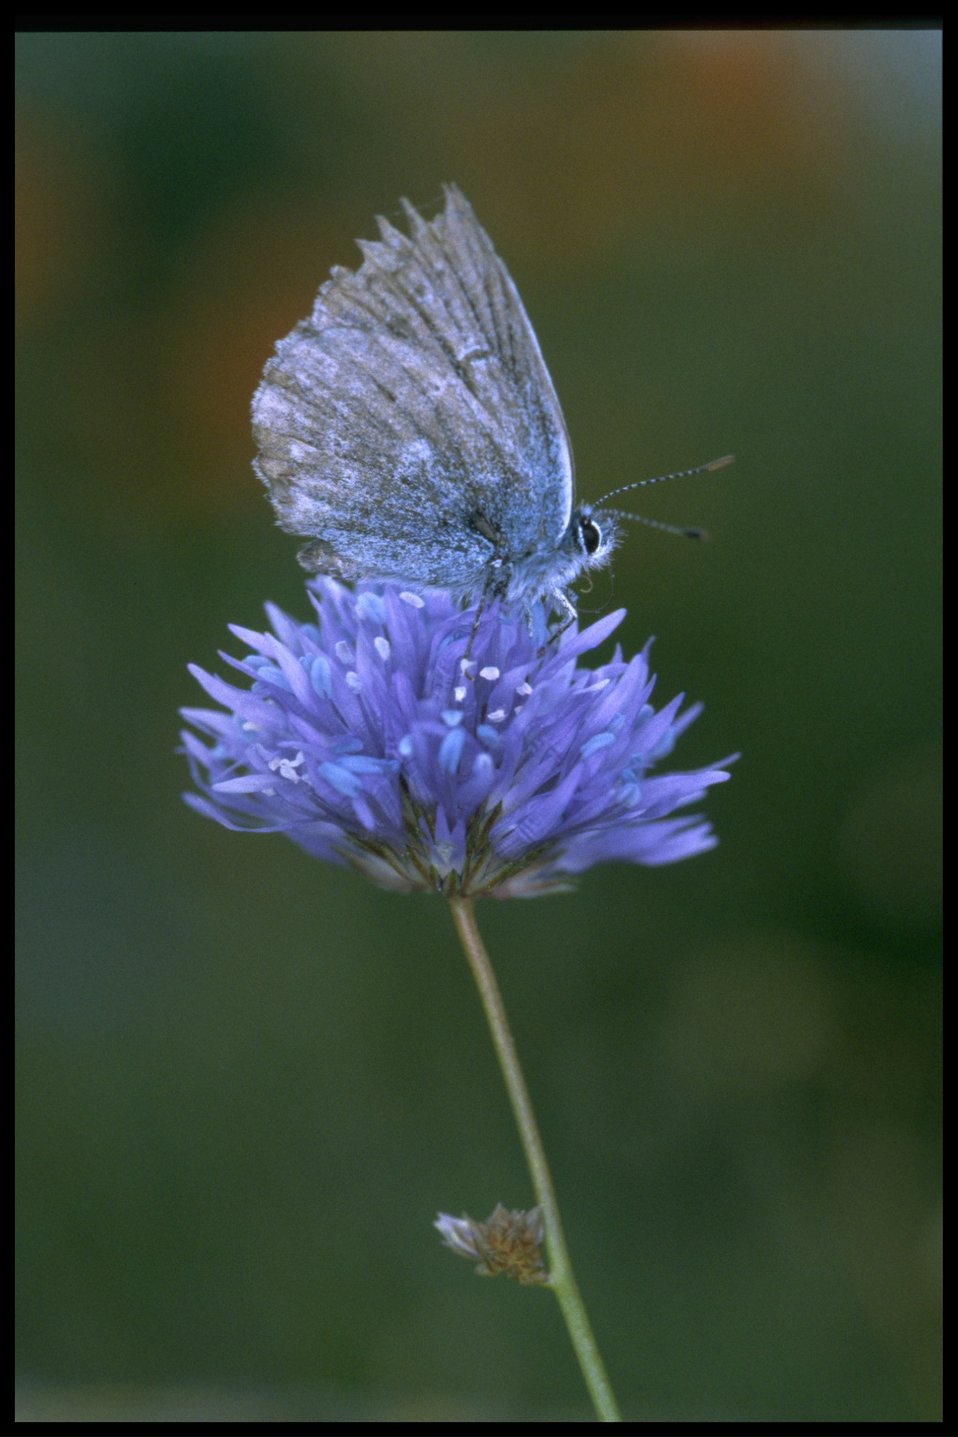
Closeup shot of butterfly and Gilia (Ipomopsis) capitata.